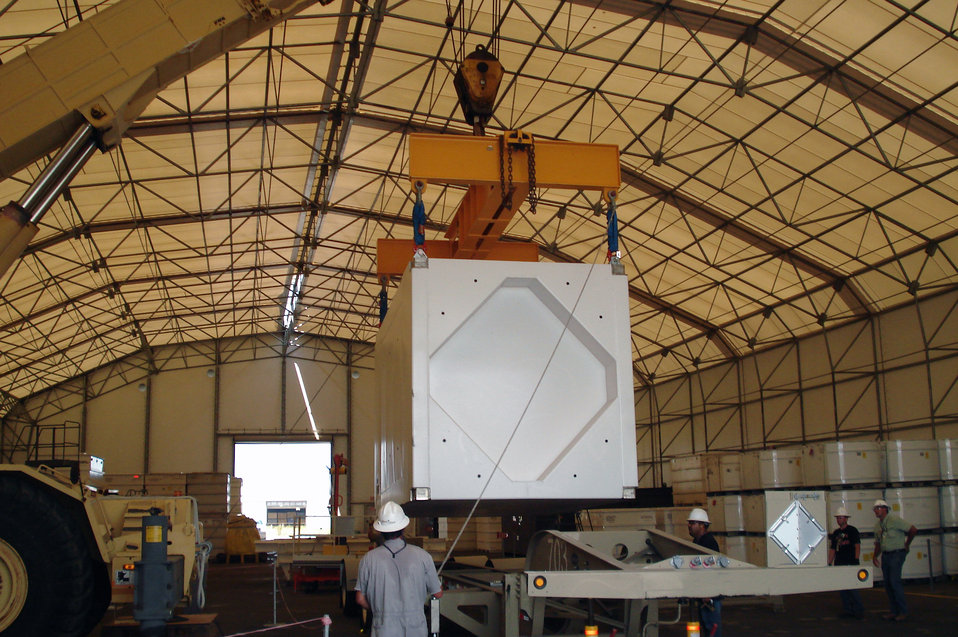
SRS 2012 Outlook: Transuranic Waste Program Set to Safely Reach Milestone

By the close of 2012, Savannah River Nuclear Solutions workers plan to complete an accelerated program to prepare 5,000 cubic meters of transuranic waste for shipment to the Waste Isolation Pilot Plant in New Mexico. By May, SRNS expects to be shipping TRU waste to WIPP, almost continuously, using six TRUPACT-III shipping containers like the one shown above.